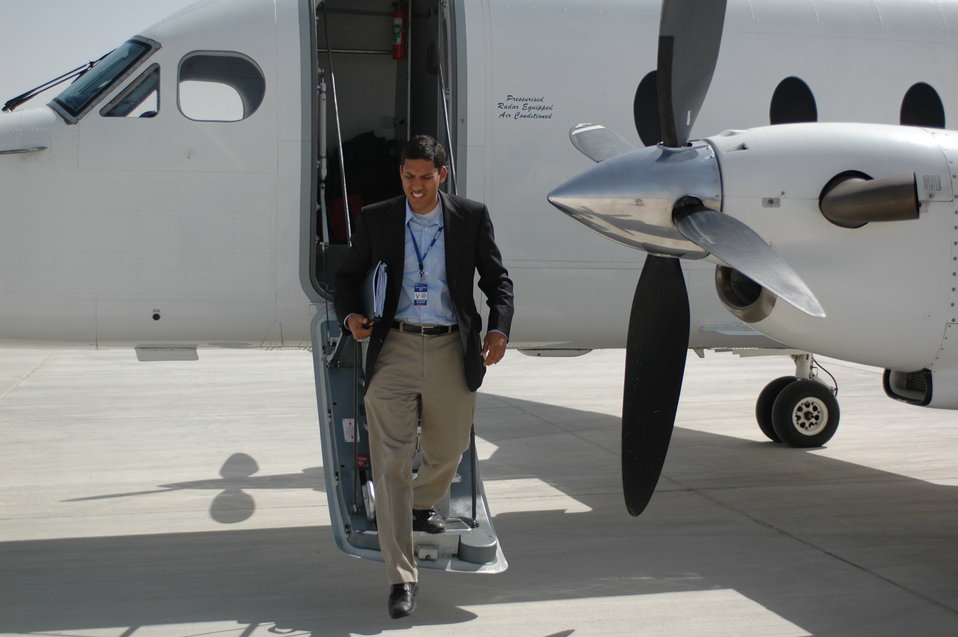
Dr Shah Visits Kandahar April 9, 2010